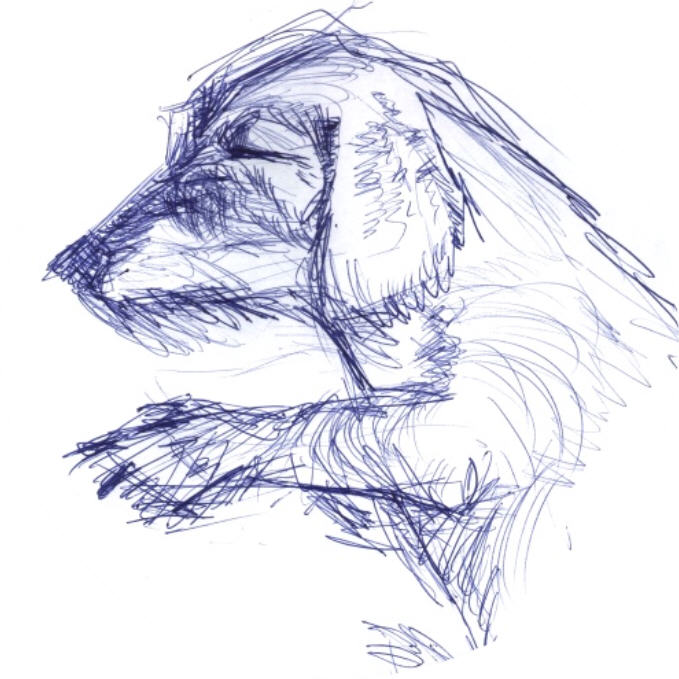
Deutsch: Eigene Zeichnung eines typischen Dackels